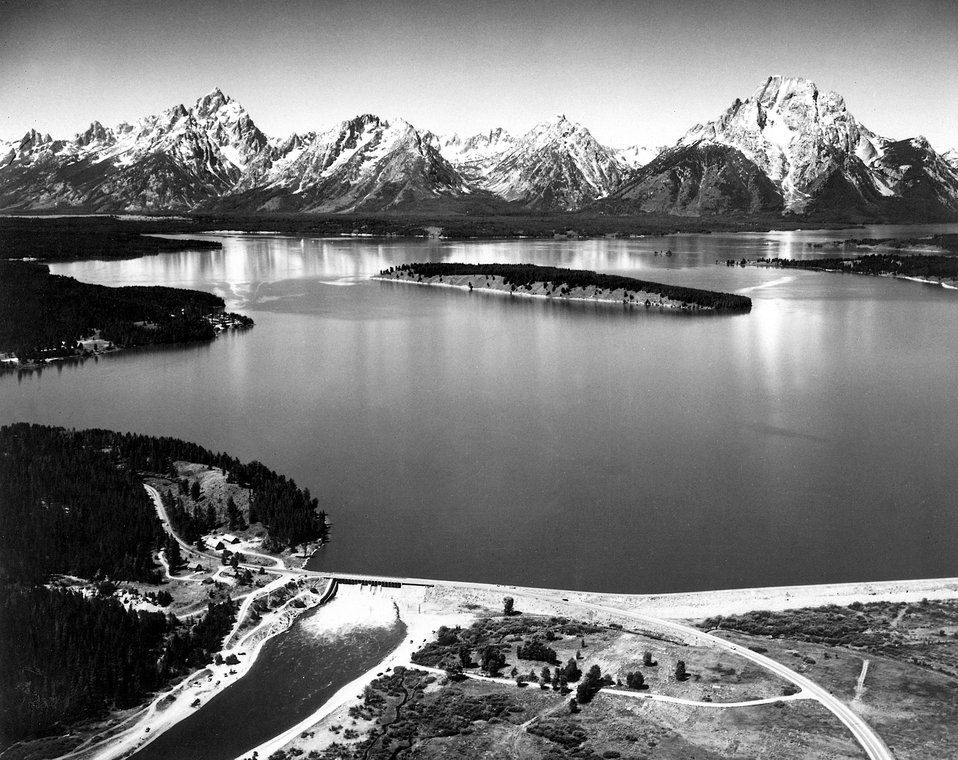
An aerial view of Jackson Lake Dam and Resevoir with the Grand Teton Mountains towering in the background. c. 1980